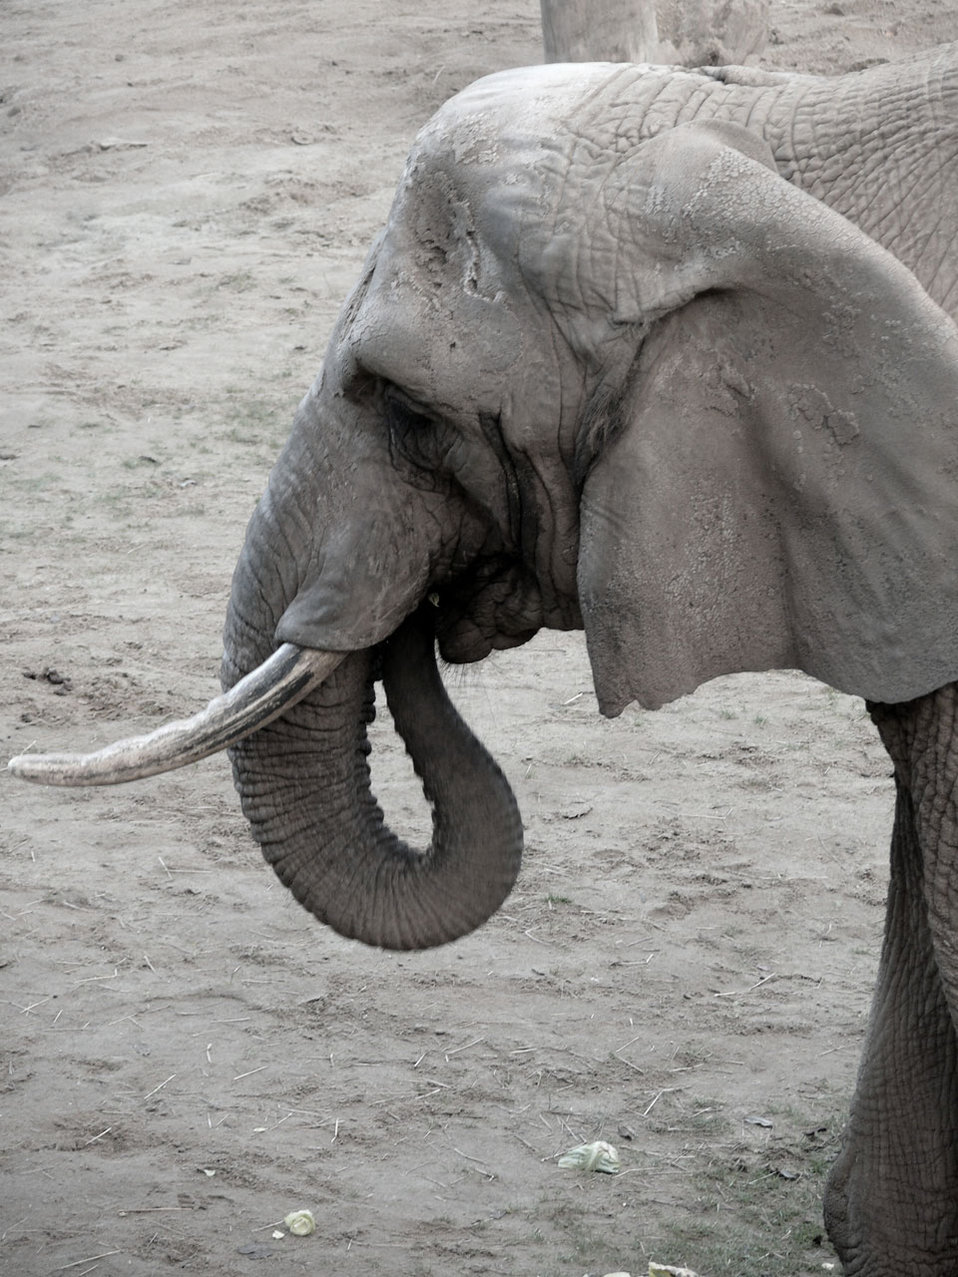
Elephant

Picture of elephant.